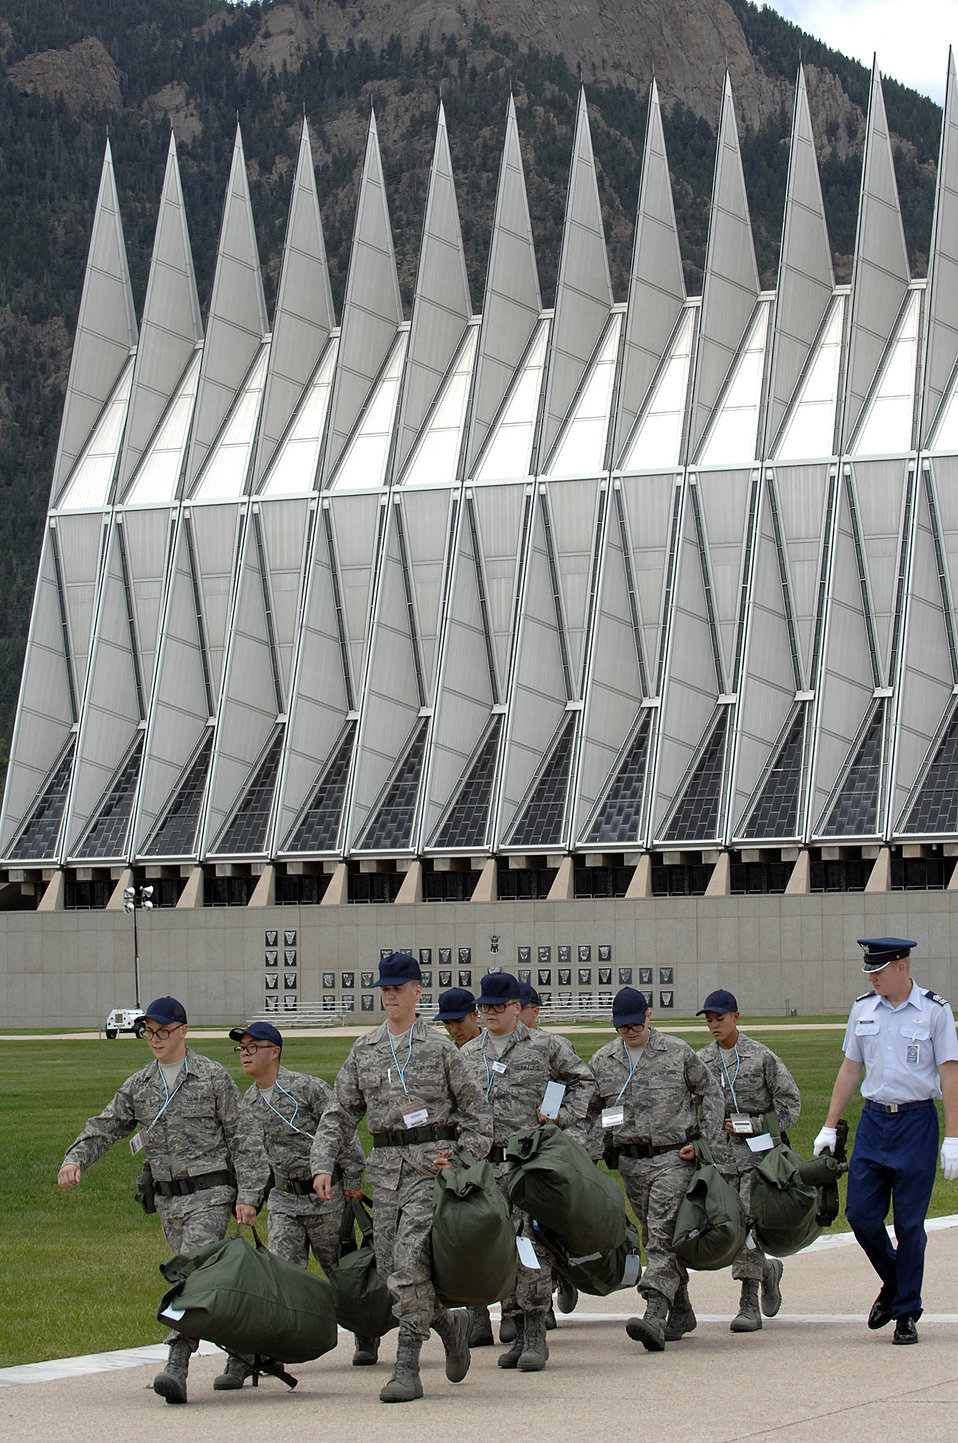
Class of 2012 Arrives

Basic Cadets march on the Terrazzo after receiving their clothing issue during inprocessing June 26 at the U.S. Air Force Academy, Colo. Inprocesing marks the start of 38 days of Basic Cadet Training, which is designed to prepare basic cadet trainees for entry into the cadet wing.